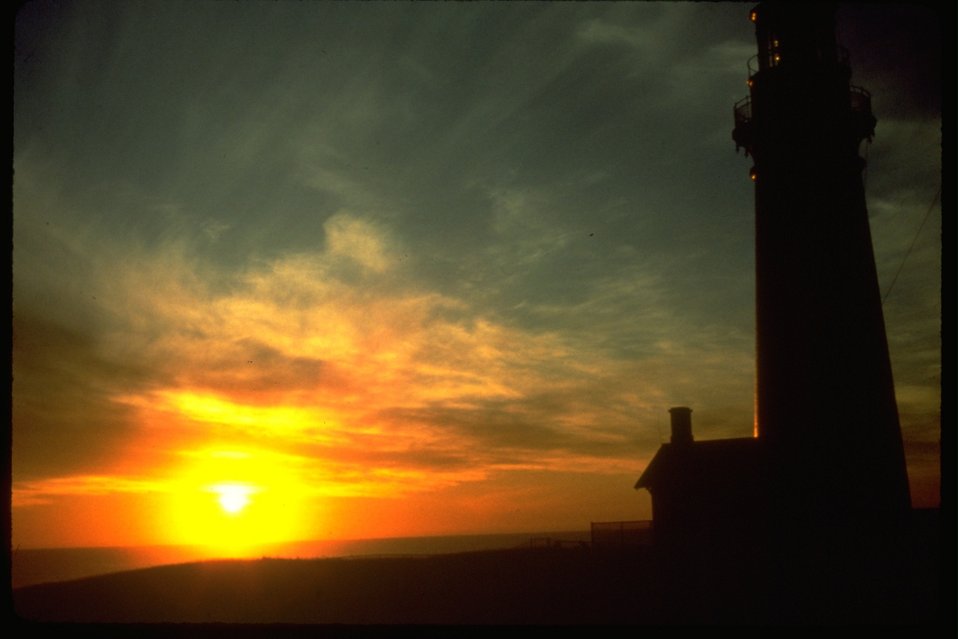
Sunset picture of the Yaquina Head Lighthouse.